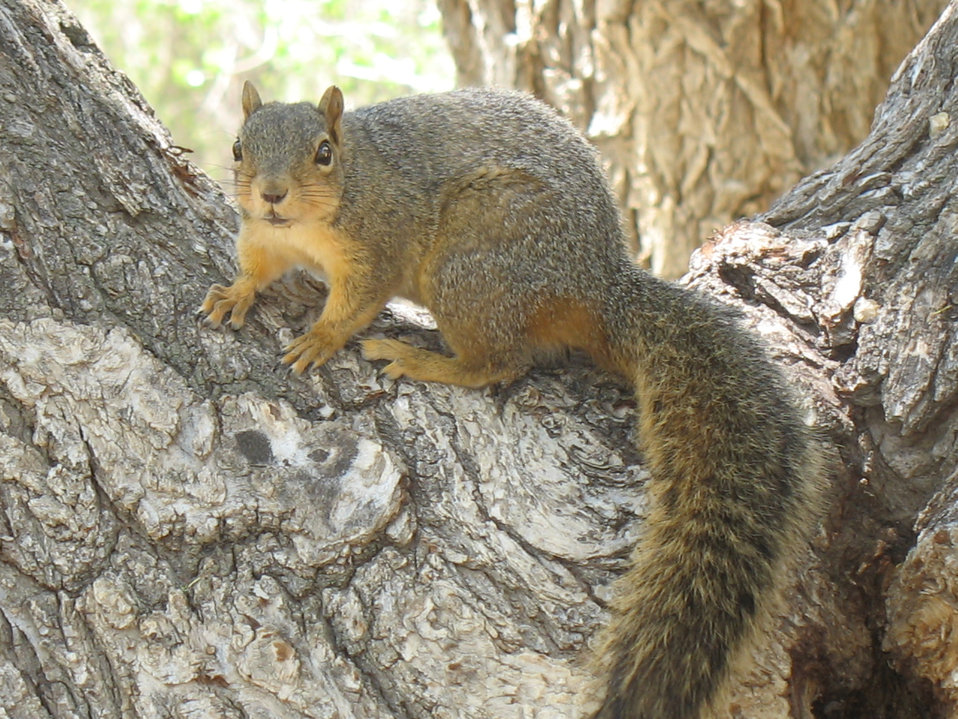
Fox squirrel, Crow Valley Campground, Briggsdale, CO.

Credit: Pedro 'Pete' Ramirez, Jr. / USFWS